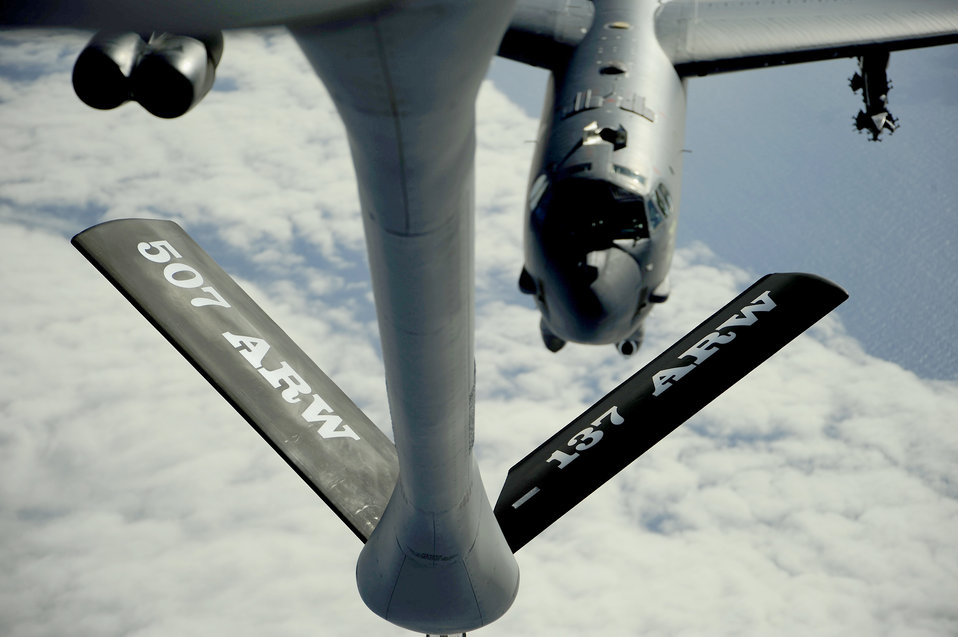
Rim of the Pacific exercise

A B-52 Stratofortress prepares for a fuel delivery from a KC-135 Stratotanker in support of exercise Rim of the Pacific exercise, or RIMPAC July 10, 2010, over the Pacific Ocean. RIMPAC is a biennial, multinational exercise designed to strengthen regional partnerships and improve interoperability. The B-52 is from the 20th Bomb Squadron at Barksdale Air Force Base, La., and the KC-135 is assigned to the 465th Air Refueling Squadron at Tinker Air Force Base, Okla.